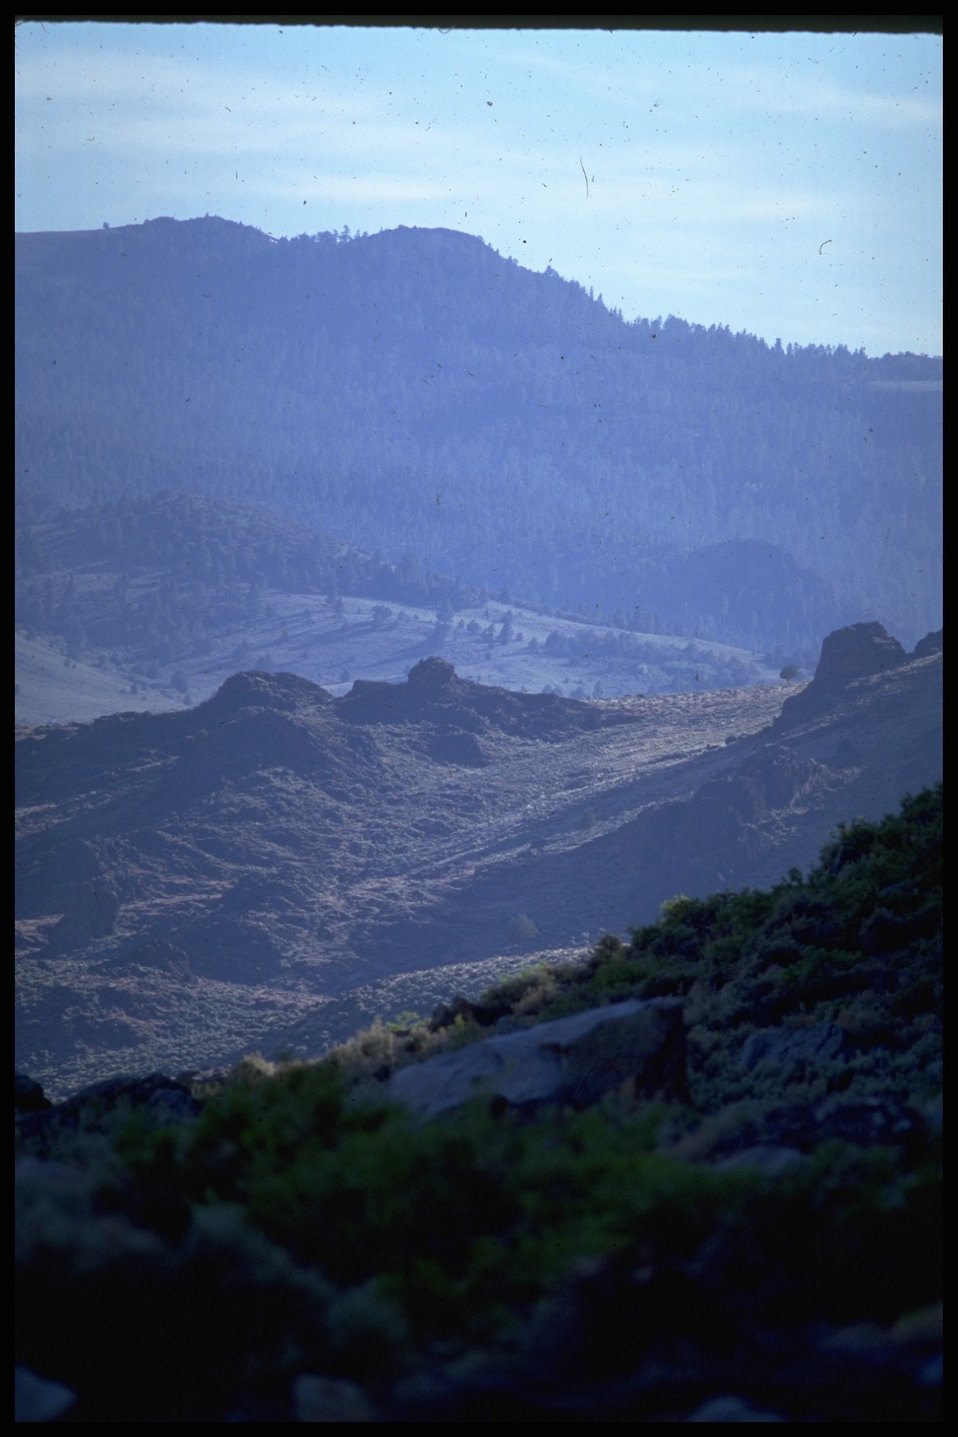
Scenic view of Golden Eagle area, Lakeview District.